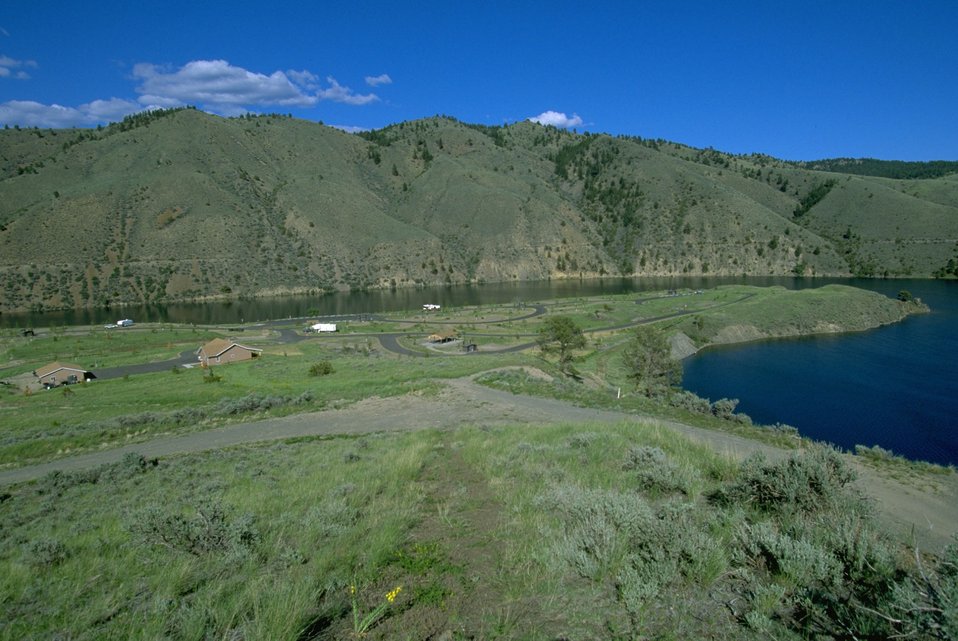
Devils Elbow Campground next to Hauser Lake